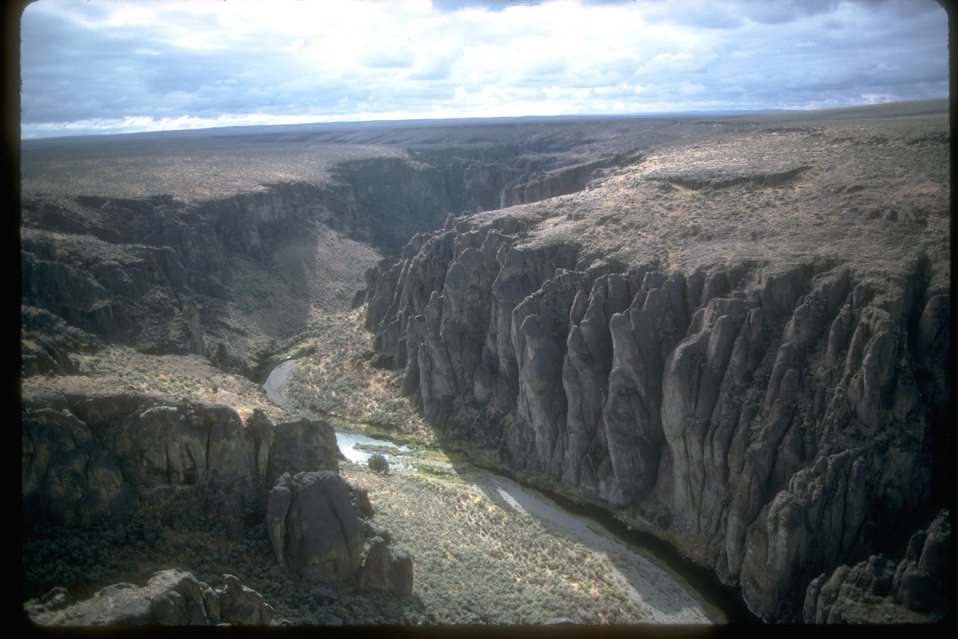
Owyhee River Canyon in the middle of a large flat rangeland area.